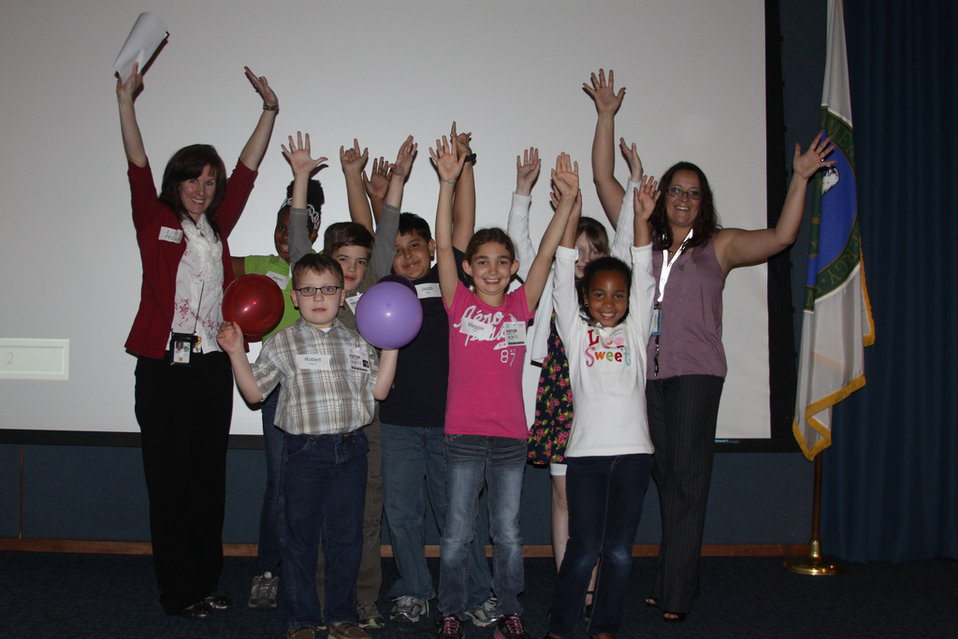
Gina's Group